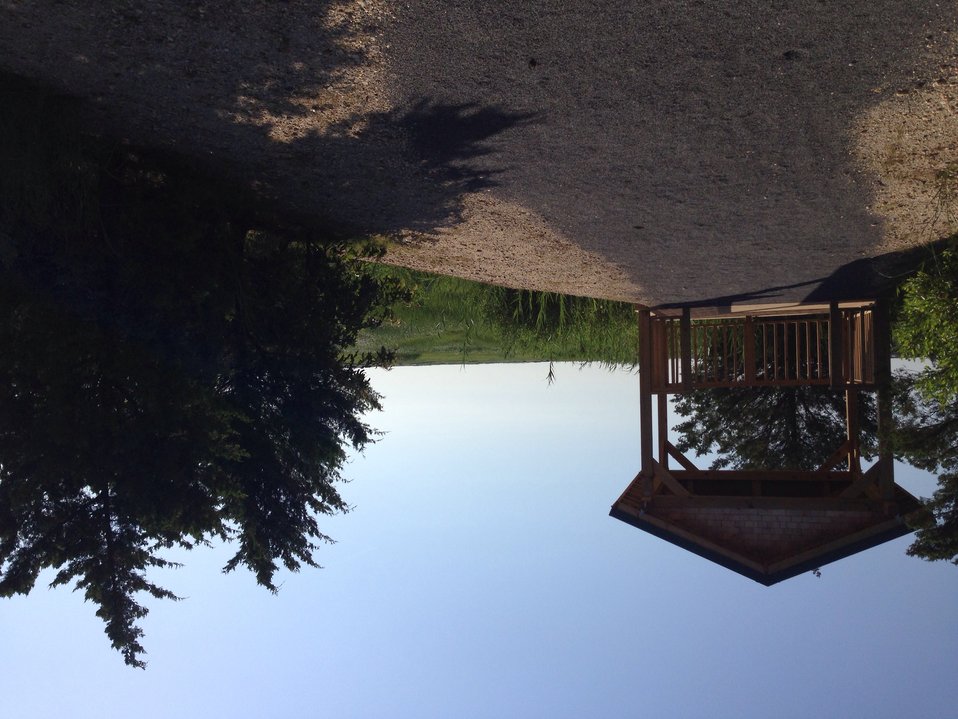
Forsythe wildlife drive after hurricane repairs

New gazebo overlook at the end of the Leed's Eco-trail.